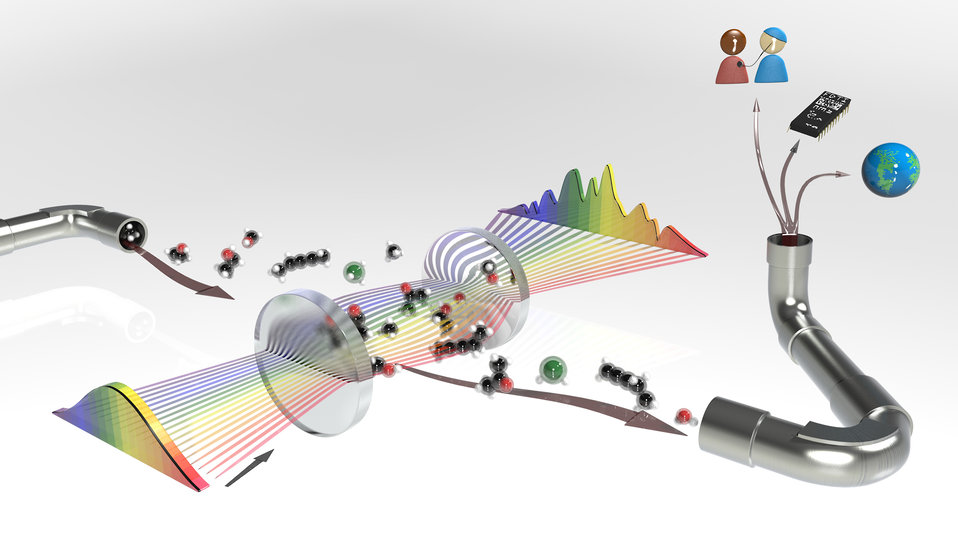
Molecular Fingerprinting

Artist's rendering of JILA's molecular fingerprinting system. A gas mixture (left) is probed by a frequency comb, a laser-based tool for identifying different colors of light. By analyzing the amounts of specific colors absorbed, the system quickly identifies molecules and their concentrations. Applications may include diagnosing disease, detecting security threats, and measuring trace gases in the atmosphere.